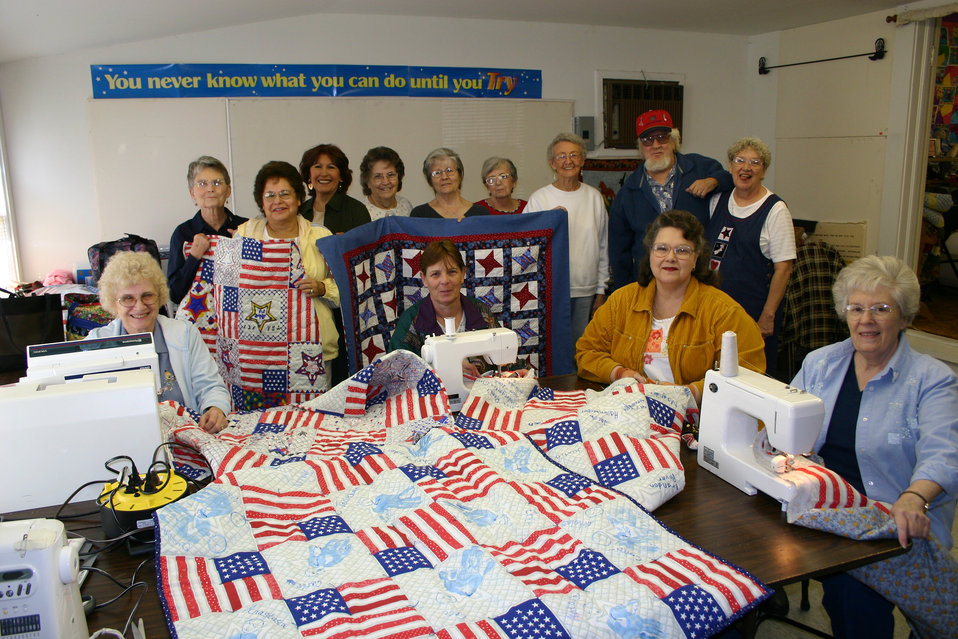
Support for wounded warriors reaches across America

LYTLE, Texas -- The